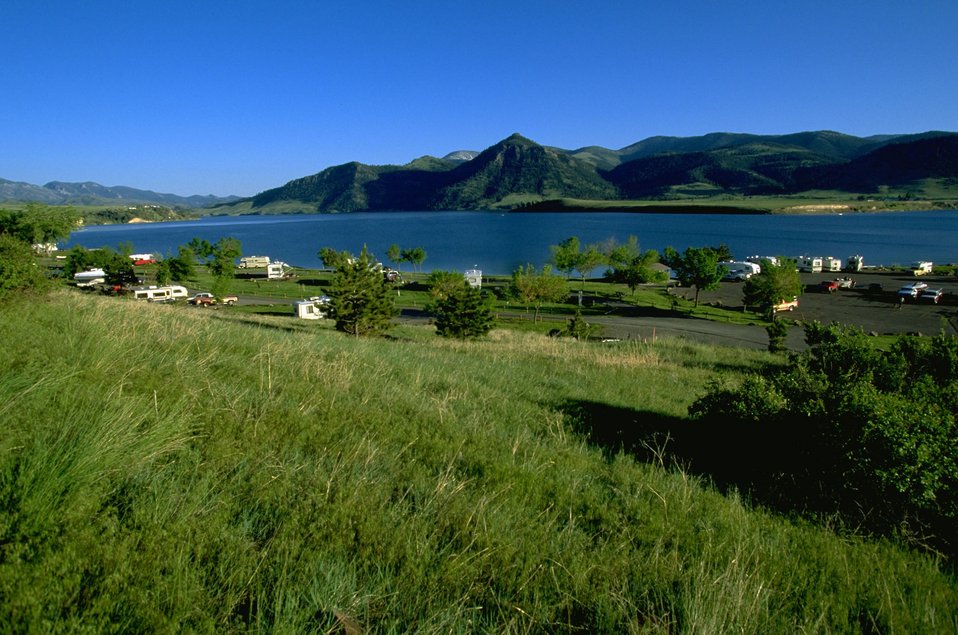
Camping on the shore of Holter Lake